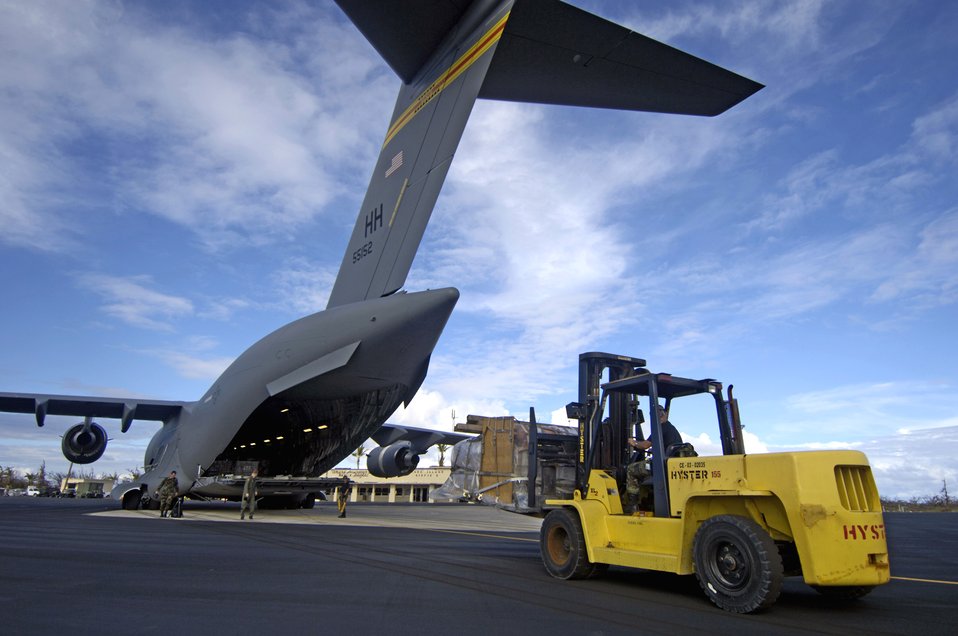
First look at Wake: Less damage than feared

Airmen from the 36th Contingency Response Group at Andersen Air Force Base, Guam, unload a C-17 Globemaster III at Wake Island Sept. 12. The C-17, from the 535th Airlift Squadron at Hickam Air Force Base, Hawaii, brought a 53-person team to assess damage left by Super Typhoon Ioke after it struck the island Aug. 31.